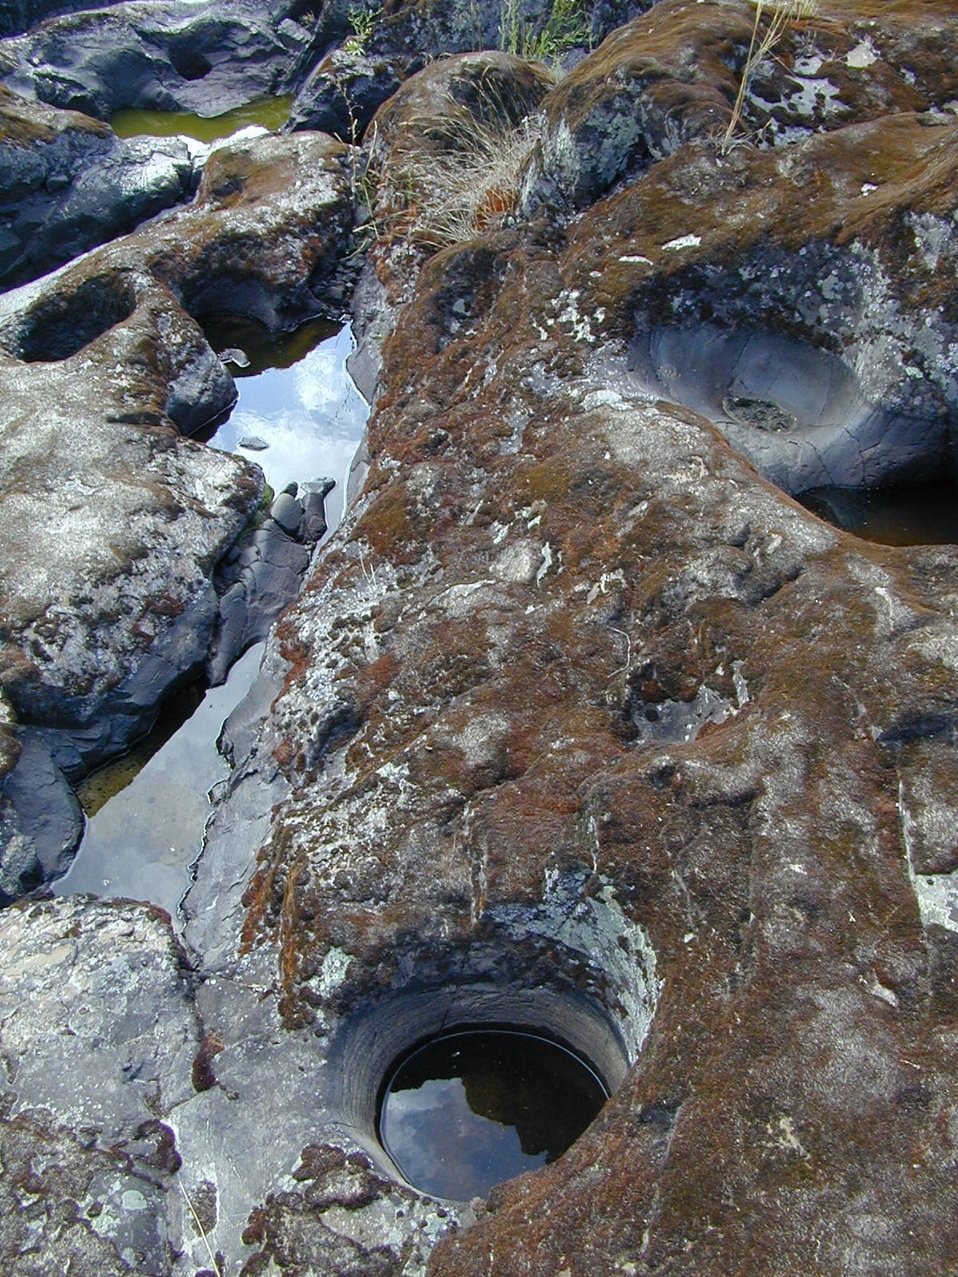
Rock potholes along the Lower Salmon River Cottonwood Field Office UCSC Upper Columbia Salmon Clearwater District